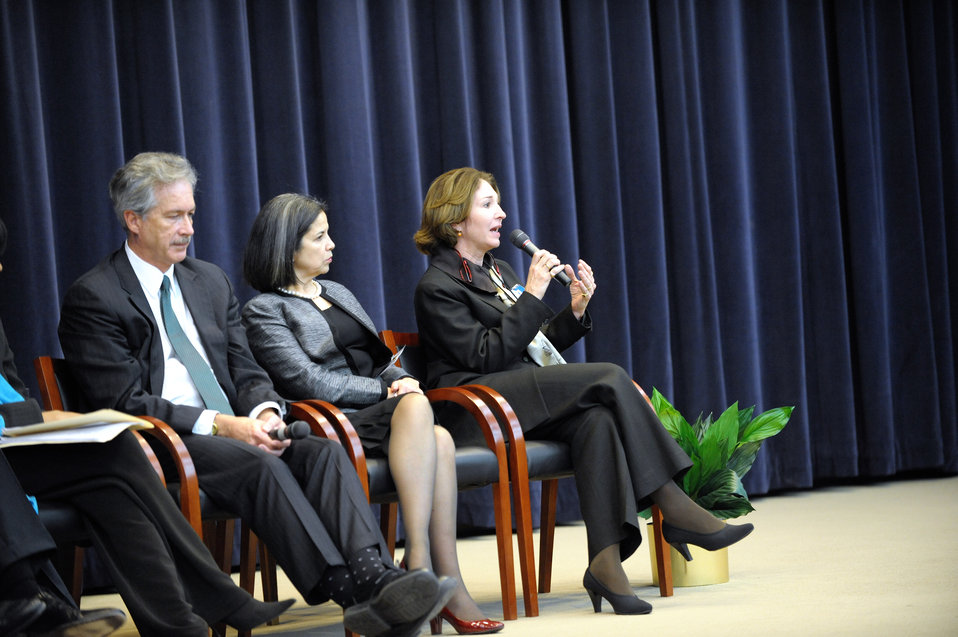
Director of Policy Planning Dr. Slaughter Participates in the Town Hall

Director of Policy Planning Dr. Anne-Marie Slaughter participates in the Town Hall at the 2011 Global Chiefs of Mission Conference at the U.S. Department of State in Washington, D.C., on February 3, 2011. Under Secretary of State for Political Affairs, left; and Under Secretary of State for Democracy and Global Affairs Maria Otero, center left; are also pictured in the photo.